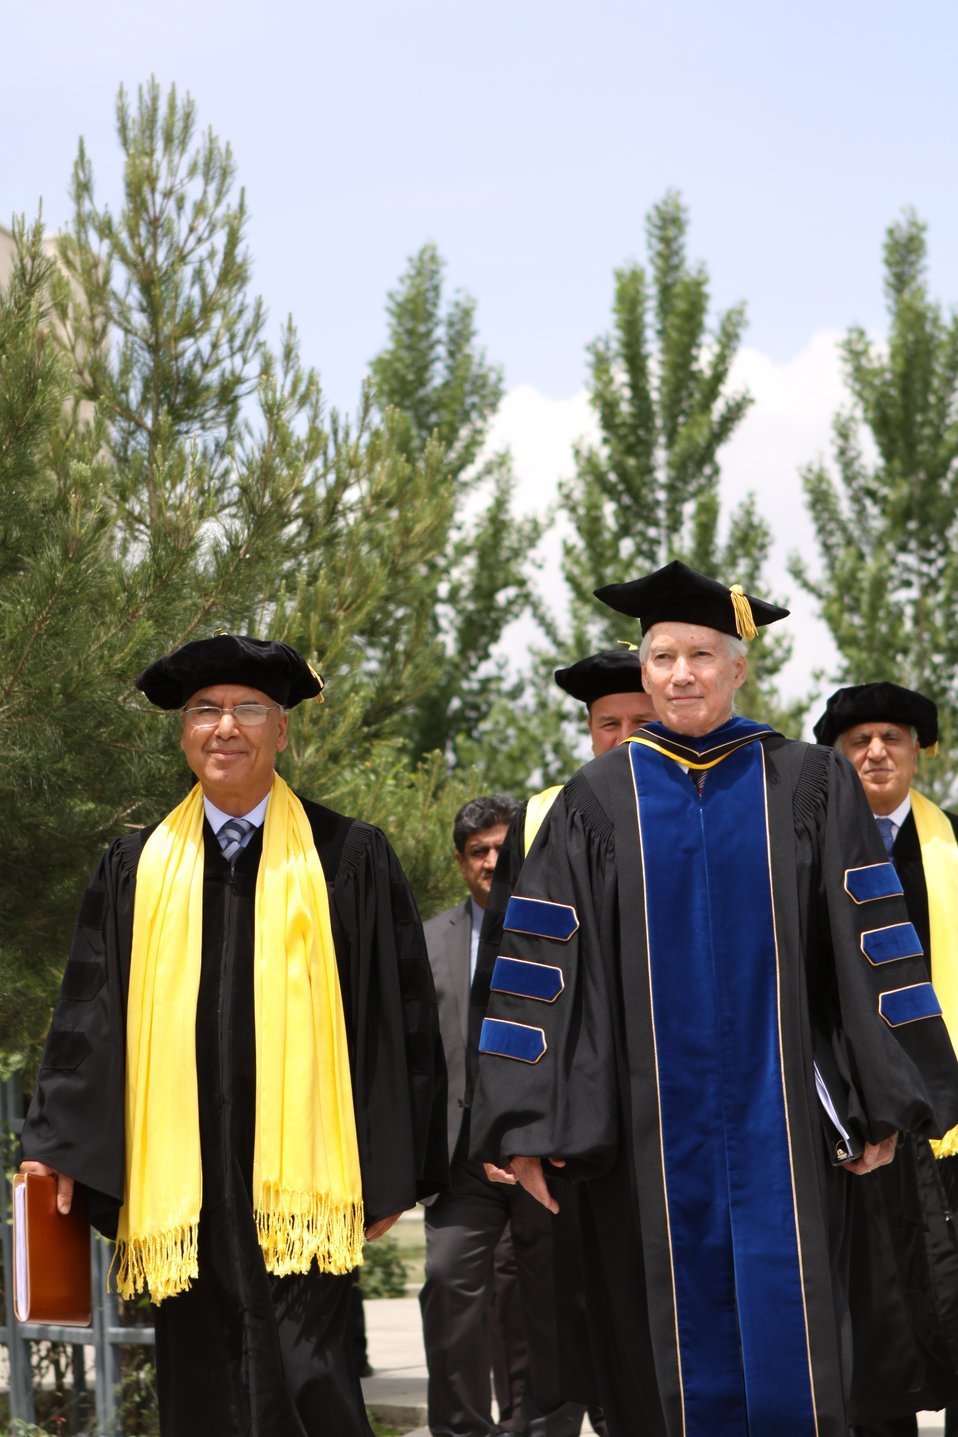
100526 AUAF Graduation 093